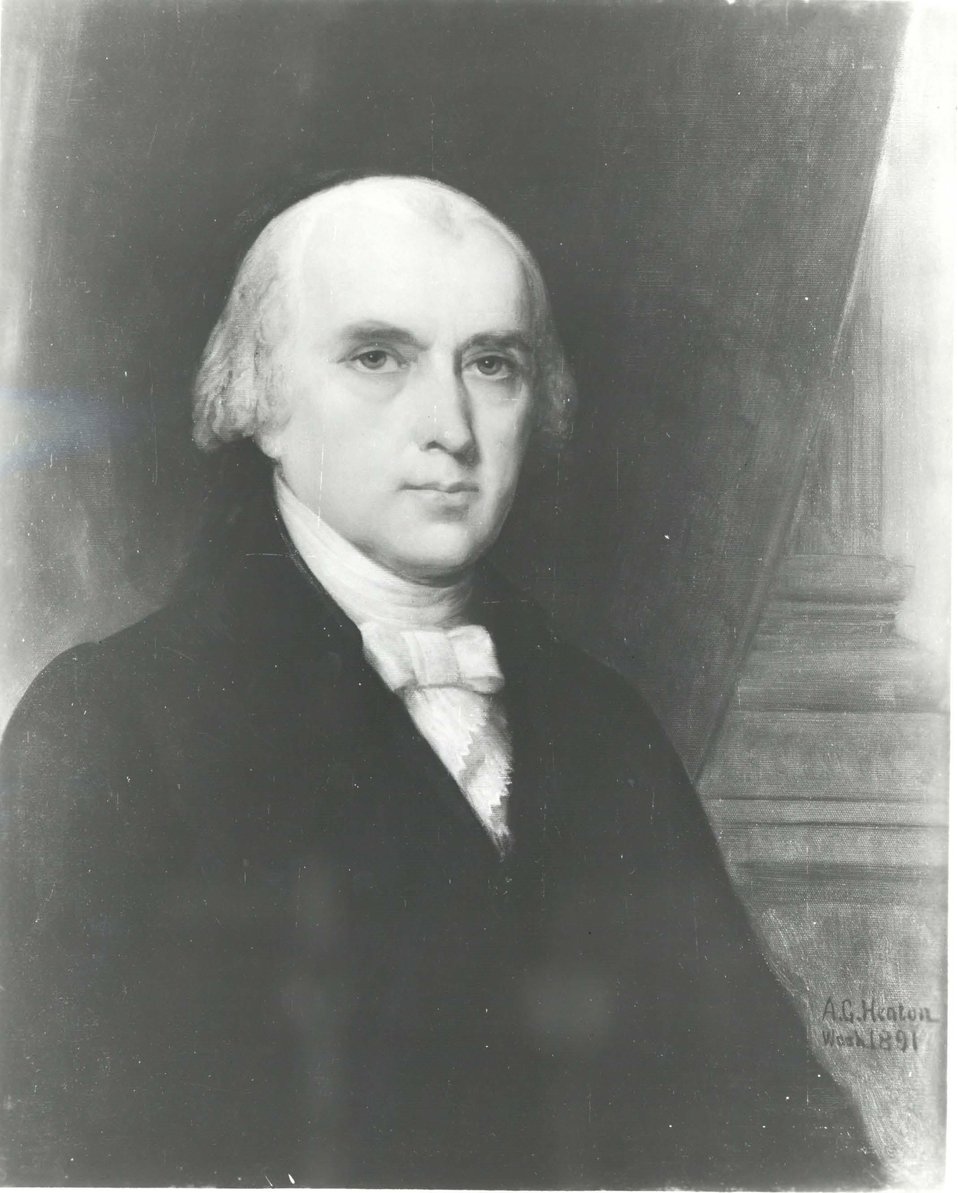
James Madison, U.S. Secretary of State, May 2, 1801 to March 3, 1809